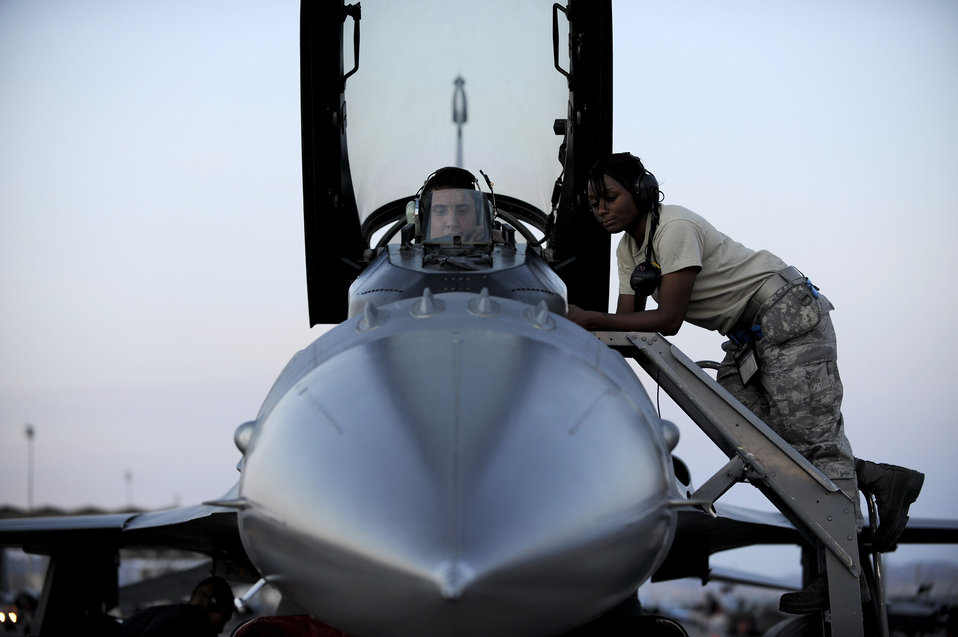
Press this lever...

Senior Airman Alden Gehrt (in cockpit) and Staff Sgt. Tarha Mazyck conduct routine maintenance before night flying operations Feb. 26 during Red Flag at Nellis Air Force Base, Nev. Both Airmen are assigned to Spangdahlem Air Base, Germany.